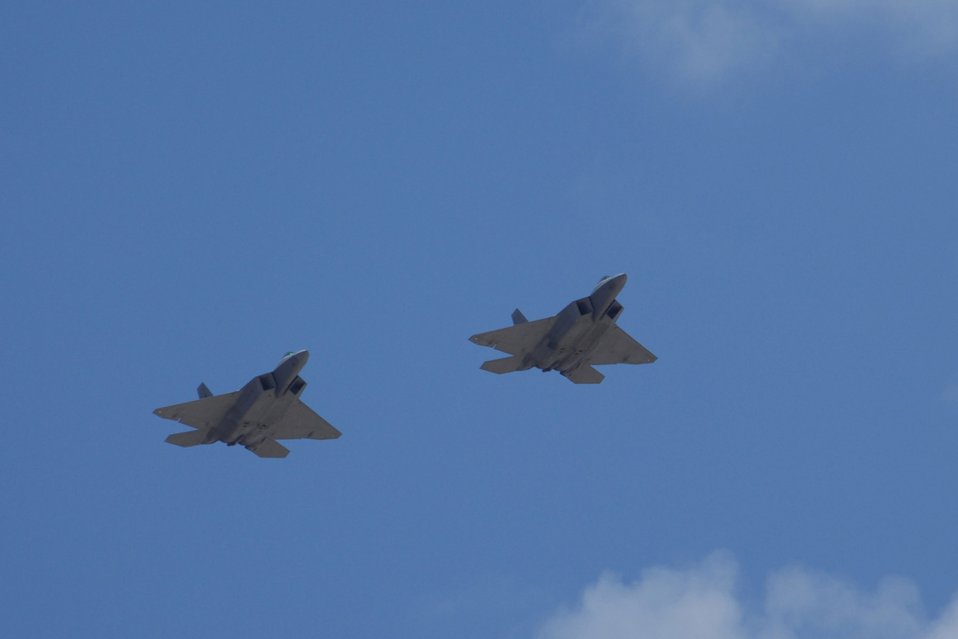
Raptors arrive at Holloman

Col. Jeff Harrigian and Lt. Col. Mike Hernandez fly a pair of F-22A Raptors over Holloman Air Force Base, N.M., June 2. The jets are two of the newly assigned aircraft to arrive at Holloman AFB. Prior to landing, the jets flew over the Tularosa Basin, allowing the community members a chance to see the new aircraft. Colonel is the 49th Fighter Wing commander and Colonel Hernandez is the 7th Fighter Squadron commander.